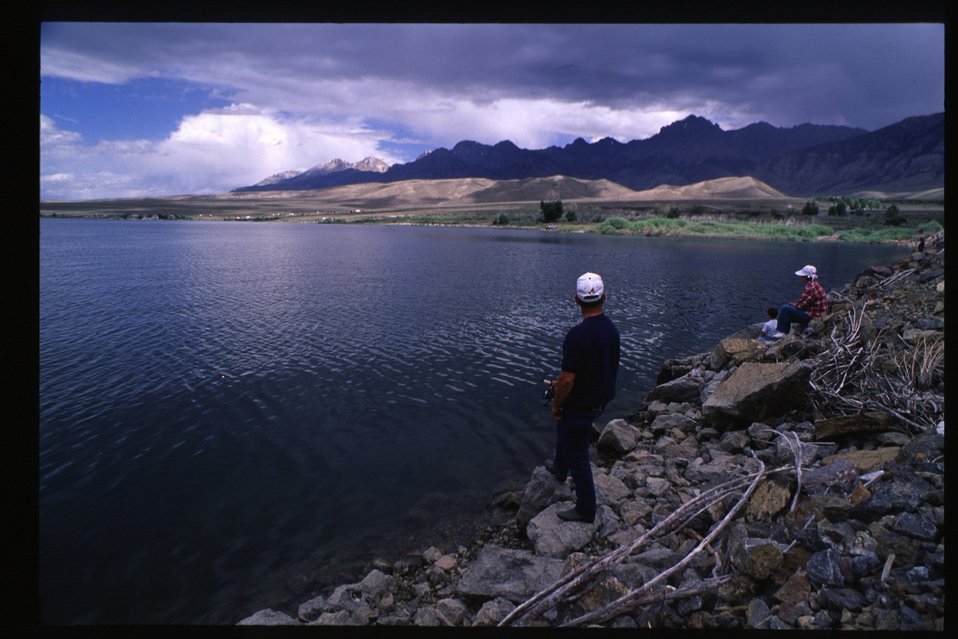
Scenic at Mackay Reservoir Fishing Challis Field Office UCSC Upper Columbia Salmon Clearwater District